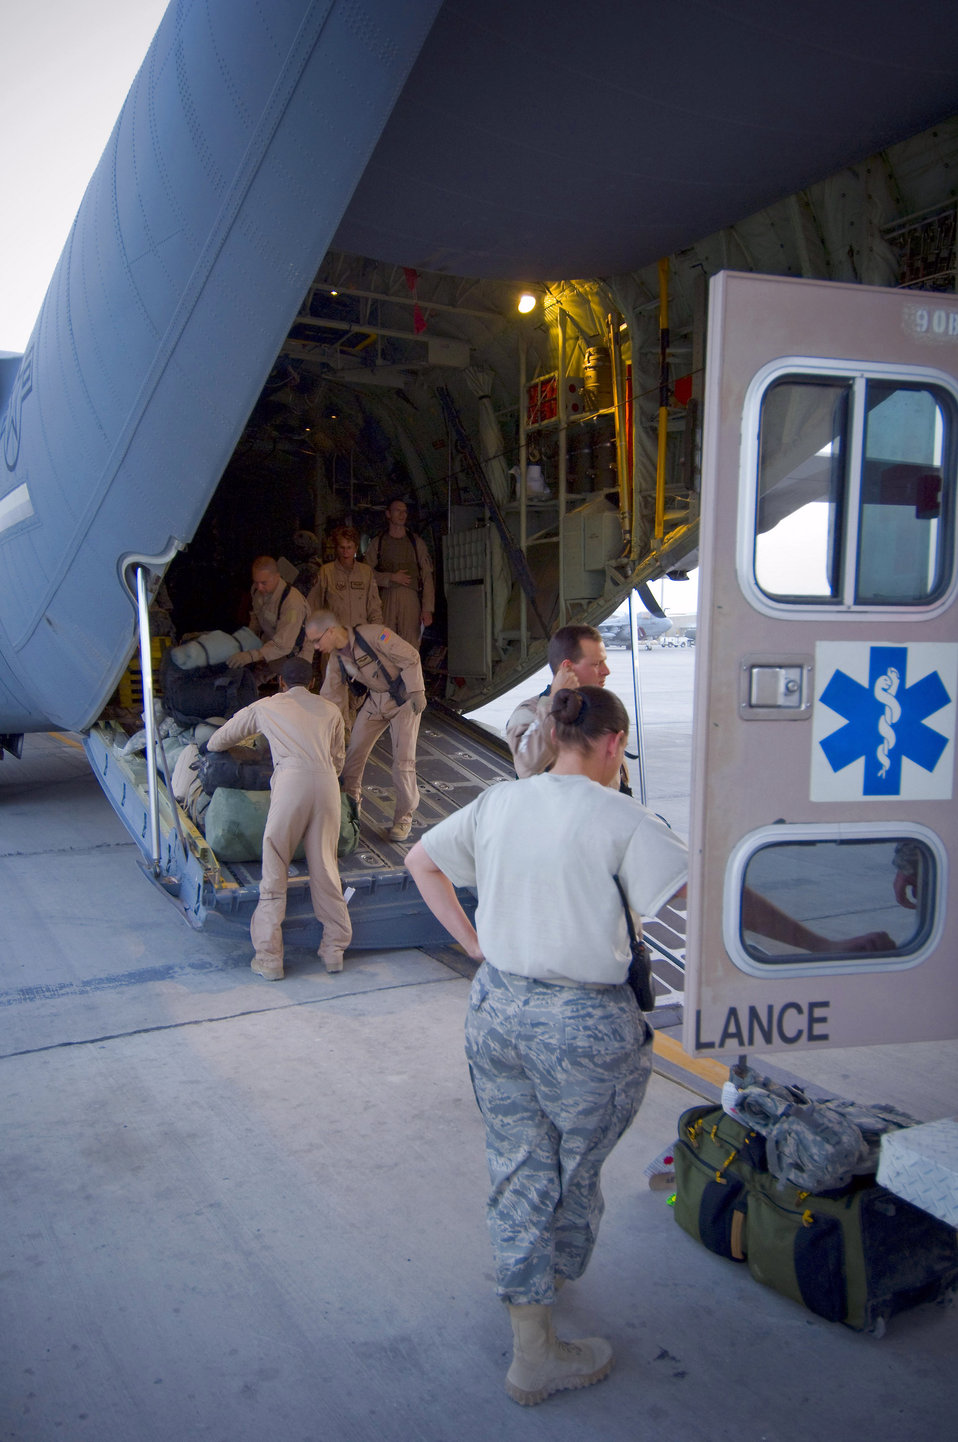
Airframes transform to 'aerovac'

Members of the 455th Expeditionary Aeromedical Evacuation Flight unload a C-130 Hercules July 8 at Bagram Air Field, Afghanistan. The team facilitated the transportation of four patients requiring medical attention to the hospital at Bagram Air Field. All five members of the team are deployed from the 375th Aeromedical Evacuation Squadron at Scott Air Force Base, Ill.